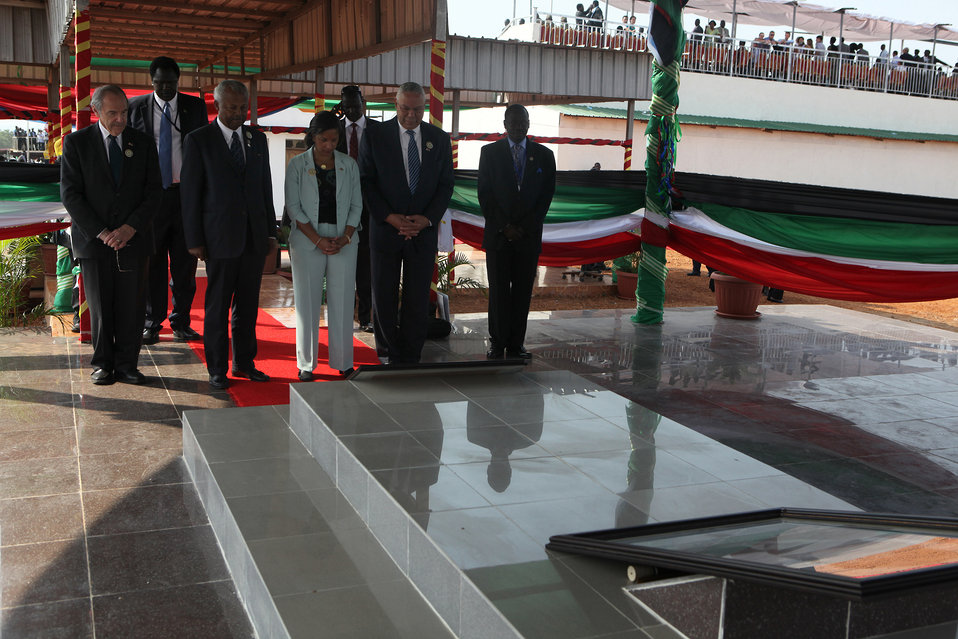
South Sudan Independence Day

Ambassador Princeton Lyman, U.S. Special Envoy for Sudan; Honorable Johnnie Carson, Assistant Secretary of State for African Affairs; Ambassador Susan E. Rice, U.S. Permanent Representative to the United Nations; Ret. General Colin Powell, former Secretary of State for the United States; and Government of South Sudan Minister for the Office of the President Dr. Cirino Hiteng honor the late Dr. John Garang at his memorial site in Juba, South Sudan on July 9, 2011.